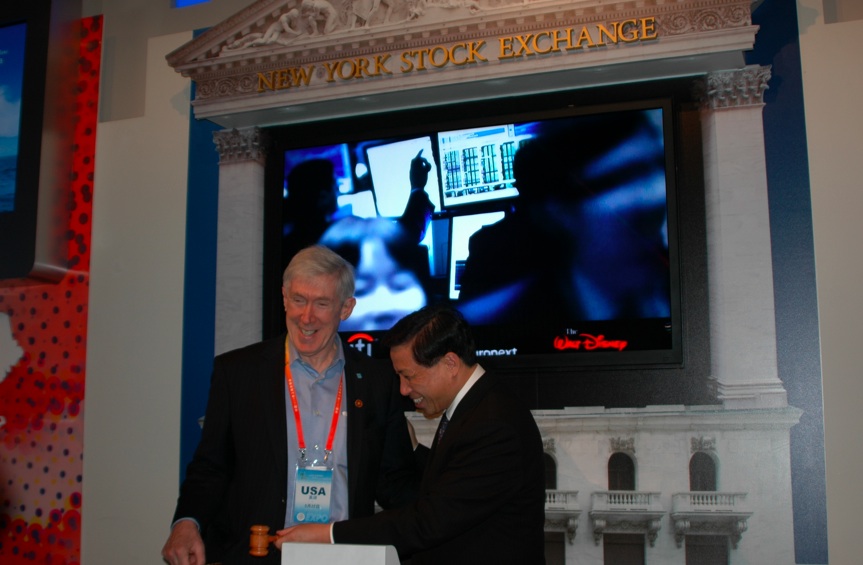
Under Secretary Hormats Enjoys USA Pavilion's NYSE

Under Secretary of State for Economic, Energy and Agricultural Affairs Robert Hormats enjoys his time at the New York Stock Exchange Display at the USA Pavilion, part of the 2010 Shanghai Expo in Shanghai, China, May 22, 2010.